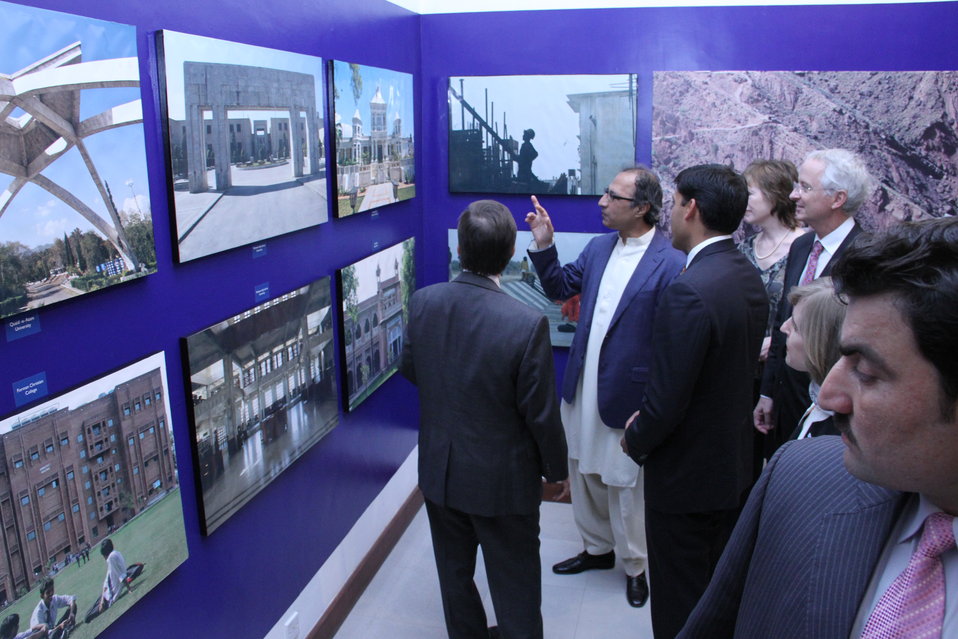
Photo Exhibition Celebrate US-PAK Cooperation at PNCA, Islamabad on April 13, 2012

Dr. Abdul Hafeez Sheikh on Photo Exhibition with US Officials